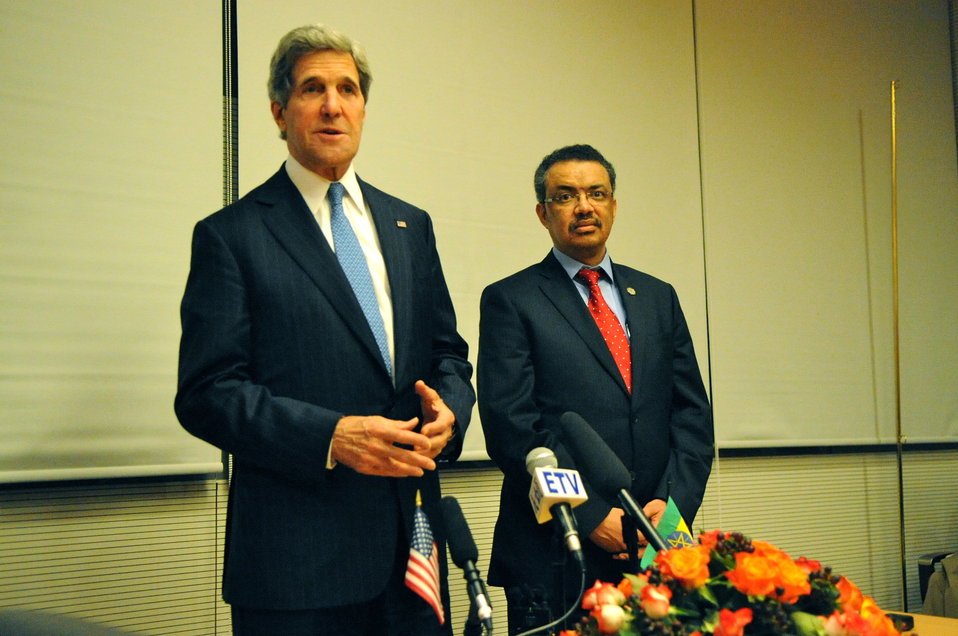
Secretary Kerry and Ethiopian Foreign Minister Adhanom Hold a News Conference in Addis Ababa

U.S. Secretary of State John Kerry speaks as he and Ethiopian Foreign Minister Tedros Adhanom hold a news conference at the 50th anniversary African Union Summit in Addis Ababa, Ethiopia, on May 25, 2013.